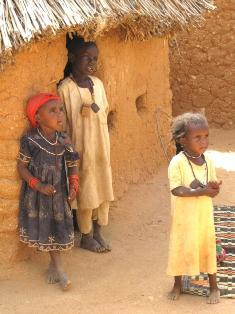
Three Sudanese refugee children are shown in Mile Camp in eastern Chad on February 14, 2009. In fiscal year 2010, two principal factors drove PRM’s development of a humanitarian strategy for Chad and the region. The first was security. Despite the presence of UN peacekeepers in Chad, both civilians and humanitarian workers have been subjected to an increasing level of banditry: robbery, carjackings, and at times even kidnapping and murder. Now the Chadian government has asked the UN mission to leave the country, an event that would further expose humanitarians and refugees to danger. The second factor was eastern Chad’s qualification as a protracted refugee situation, meaning it has been in existence for over five years. Even with some hopeful political steps towards peace in Darfur in early 2010, the refugees will likely remain in Chad for several more years. With lifesaving services well-established in the camps, therefore, PRM has shifted its focus to programs that provide a longer-term benefit, such as education and vocational training.